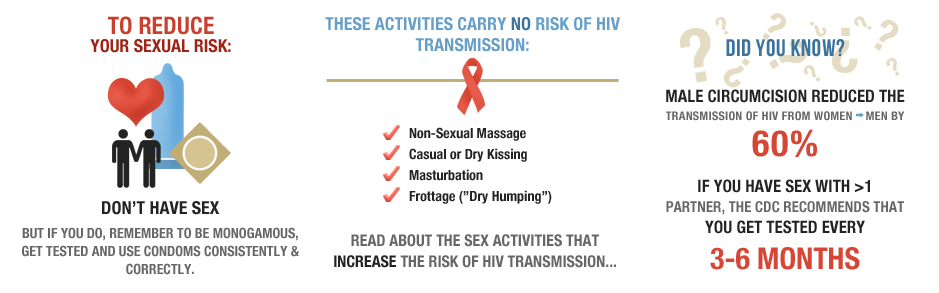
sexual risk factors